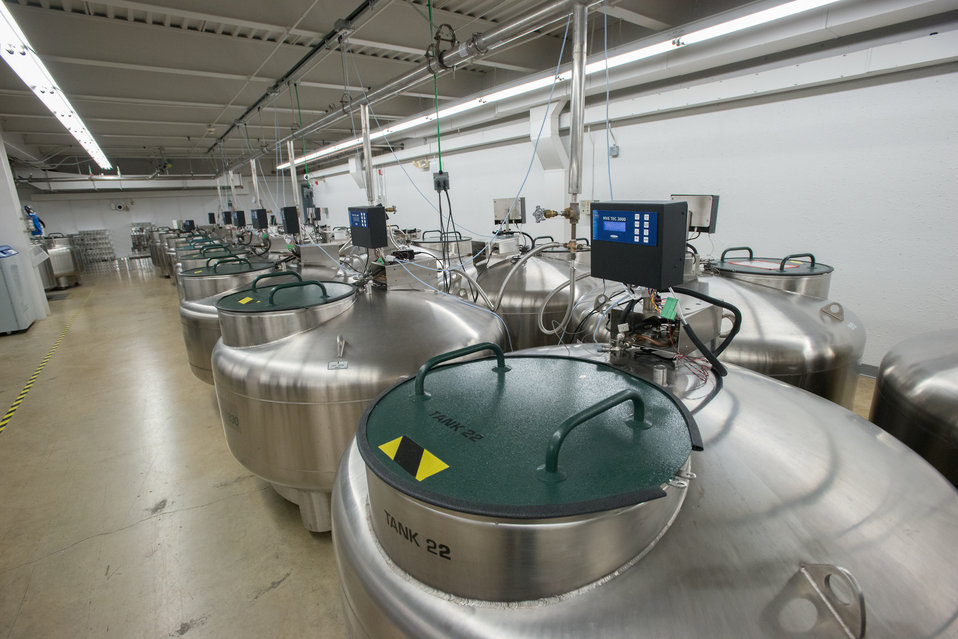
This is the U.S. Department of Agriculture's (USDA) Agriculture Research Service (ARS) National Center for Genetic Resources Preservation (NCGRP) Cryogenic Storage Vault in Ft. Collins, CO on Wednesday, Nov. 6, 2013. The vault currently operates more than 45 cryogenic tanks that hold animal germplasm, plant tissue culture, and seeds that are stored at -196 °C (-321 °F) in liquid nitrogen storage or to -193 C. (-315 °F) in nitrogen vapor storage. NCGRP is the largest agricultural gene bank facility in the U.S. The NCGRP staff conducts groundbreaking research to develop more efficient and effective means for preserving plant and animal germplasm, and for better understanding the genetic structure of these invaluable materials. The research findings, preservation techniques, and specialized technology developed by the NCGRP have been adopted by gene banks around the world: many international scientists travel to the NCGRP for research and training.